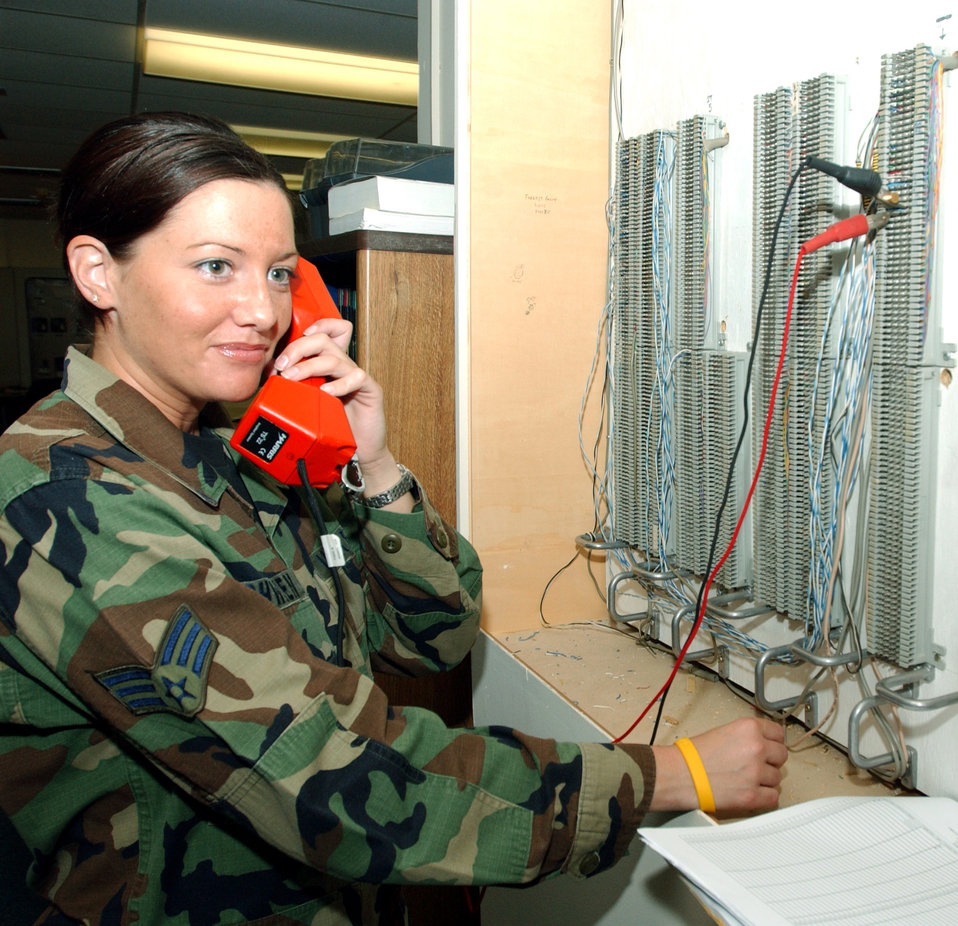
Upgrading switches

AVIANO AIR BASE, Italy -- Senior Airmen Jessica Schwien verifies a cable for the upgrade of the base telephone switch here Oct. 7. Airman Schwien is a member of the 31st Communications Squadron.